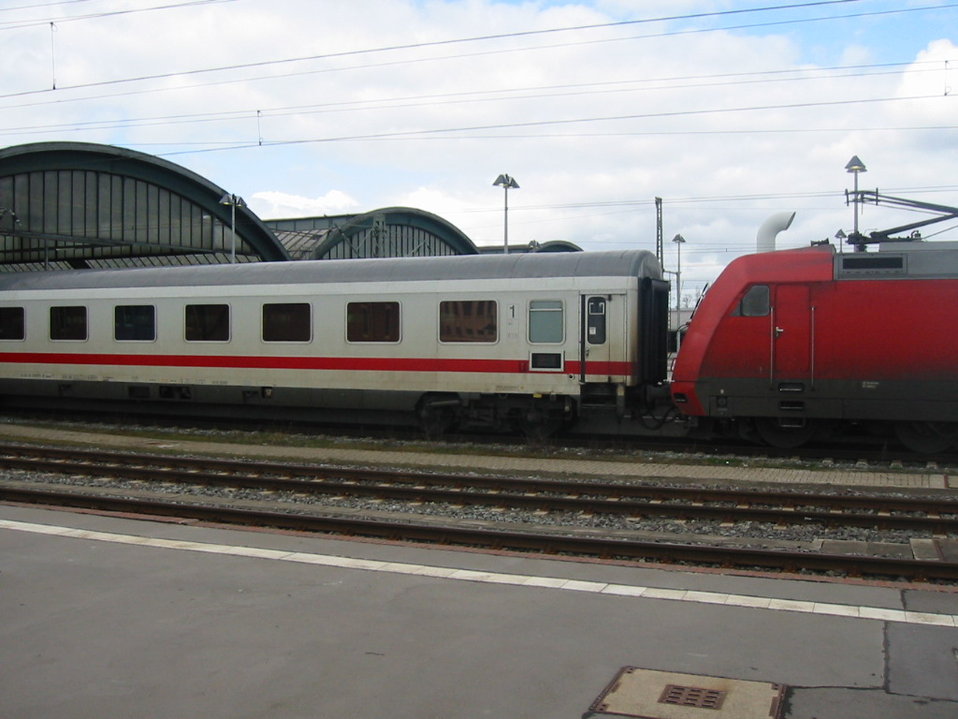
Deutsch: InterCity in Oldenburg Hauptbahnhof. Italiano: InterCity nella stazione centrale di Oldenburg.